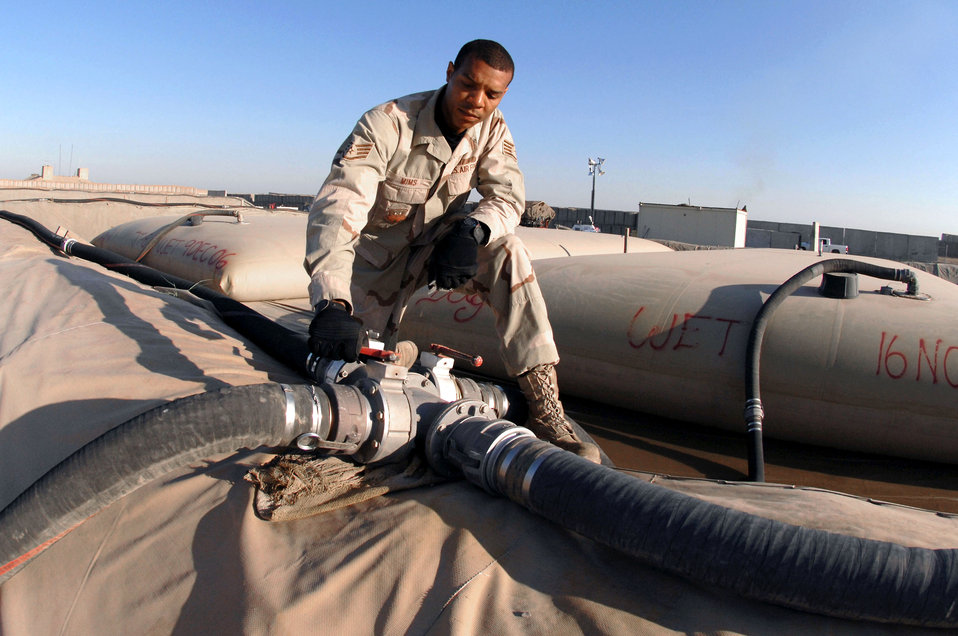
Keepin' the fuel flowin' in Kirkuk

Staff Sgt. Edward Mims closes a block valve to a 50,000-gallon, JP-8 fuel bladder April 5 at Kirkuk Air Base, Iraq. Sergeant Mims is a fuels supervisor with the 506th Expeditionary Logistics Readiness Squadron.